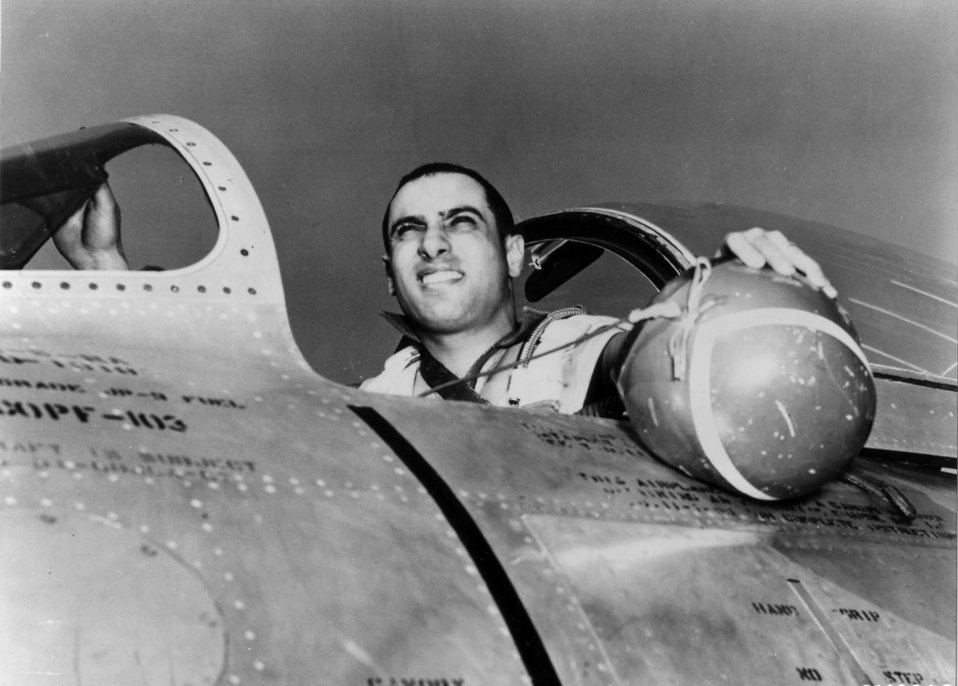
James Jabara

1940's -- James Jabara